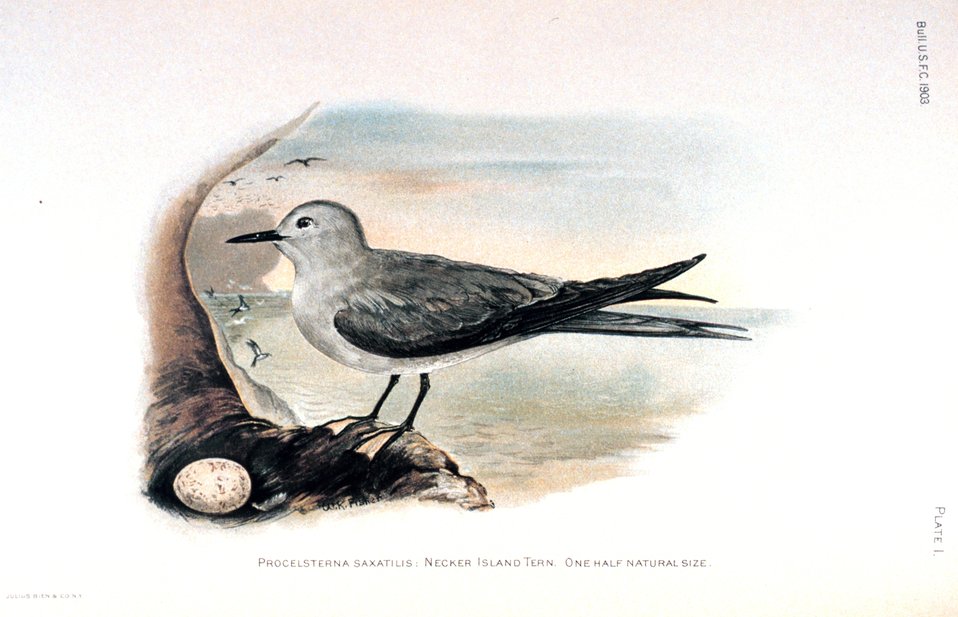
Procelsterna saxatilis. Necker Island Tern. In: 'Birds of Laysan and the Leeward Islands, Hawaiian Group' by Walter K. Fisher. Bulletin of the Bureau of Fisheries, Volume 23, 1903, Part III, p. 769, Plate I.